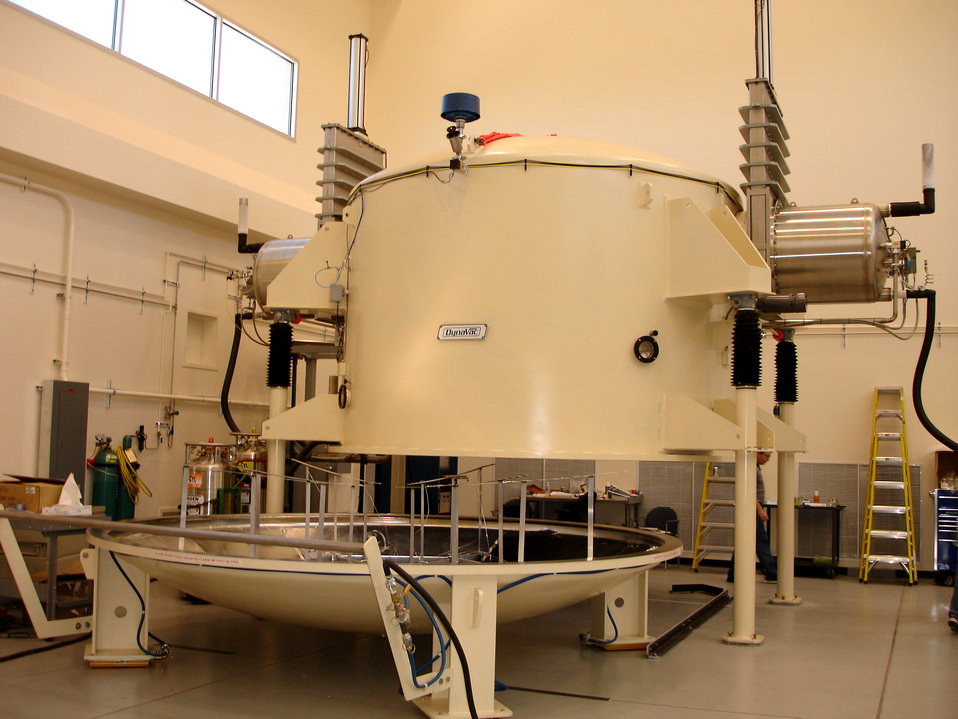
Mirror-coating chamber in place at Starfire Optical Range

The Defense Department's largest mirror-coating chamber, shown here open at center, has been installed at the Air Force Research Laboratory's Starfire Optical Range at Kirtland Air Force Base, N.M. (U.S. Air Force photo/1st Lt. Wellington Phillips